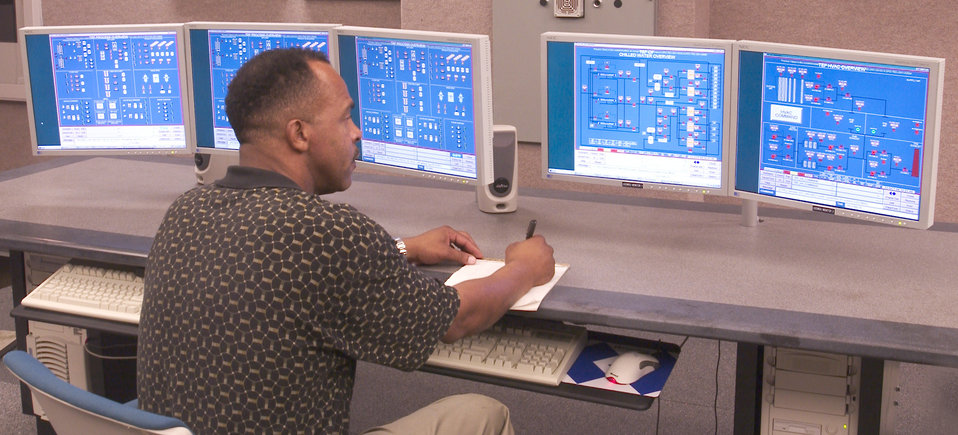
Inside the control room at the Tritium Extraction Facility ( TEF) on the Savannah River Site.

The Tritium Extraction Facility was constructed at SRS to supply tritium, a radioactive form of hydrogen necessary for the nation's nuclear weapons stockpile. In November 2006, the TEF successfully and safely began radioactive operations. In February 2007, SRS completed the startup of the TEF and safely made the first transfer on new tritium gas to the nation's tritium inventory. The TEF is part of the National Nuclear Security Administration's (NNSA) Defense Programs operations at SRS.